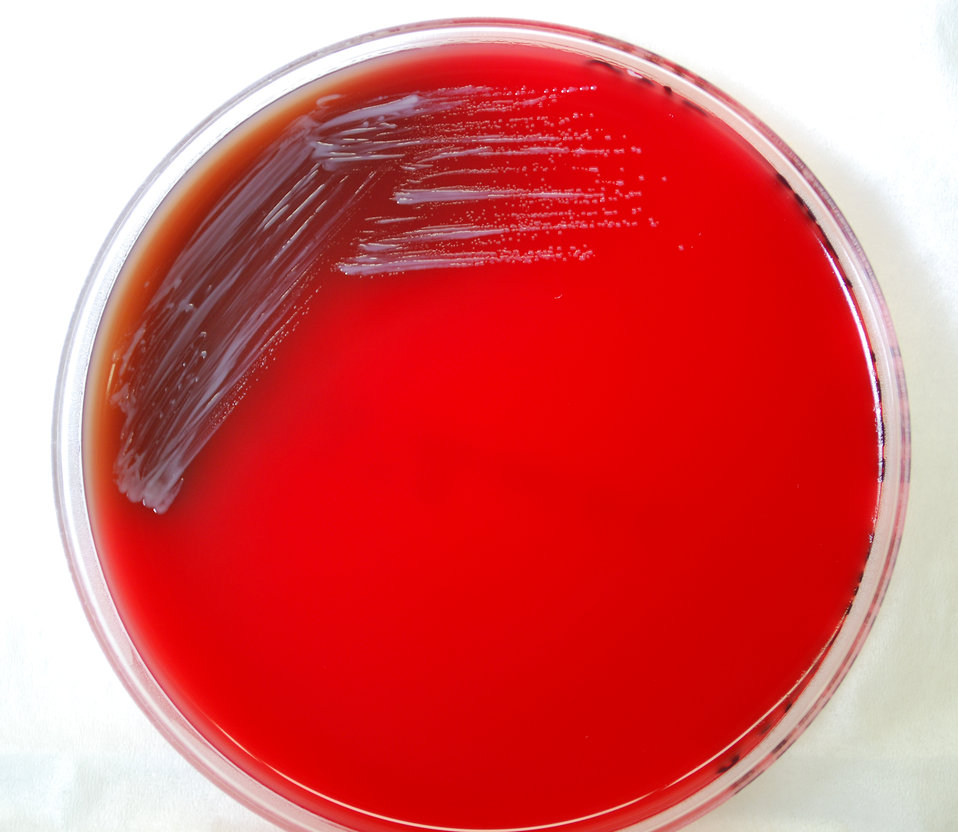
This photograph depicts the colonial morphology displayed by Gram-negative Brucella abortus bacteria, which was grown on a medium of sheep blood agar (SBA), for a 48 hour time period, at a temperature of 37�C. For a closer view of these bacterial colonies, see PHIL 12242.